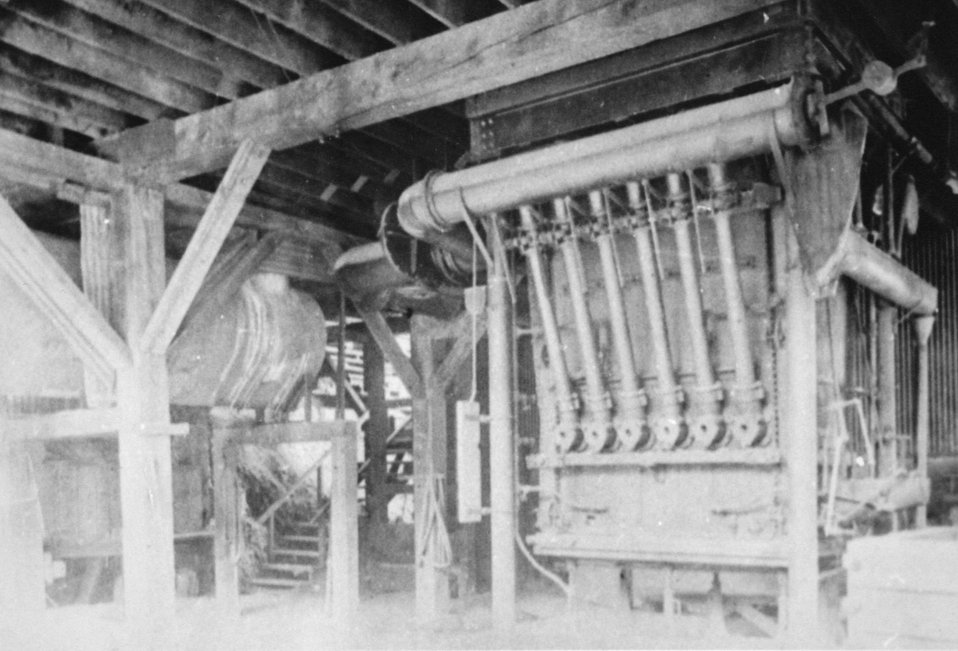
Almeda mine